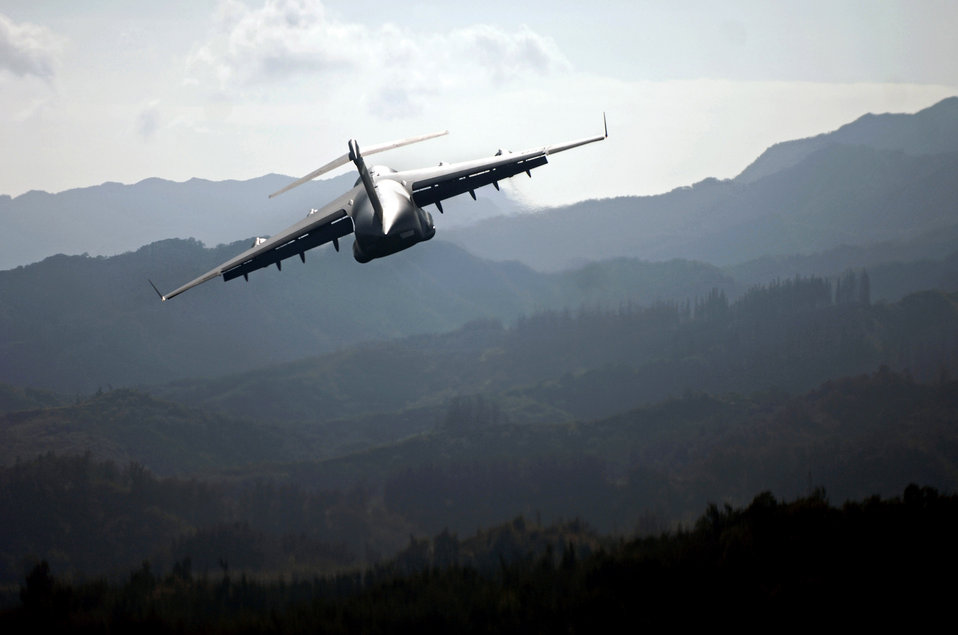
Practice makes perfect

A C-17 Globemaster III flies over the Kahuku Training Range in Hawaii Jan. 7 during an airdrop training mission. C-17s and their crews, from the 535th Airlift Squadron at Hickam Air Force Base, Hawaii, are conducting two-ship airdrops at the range as part of their currency training.